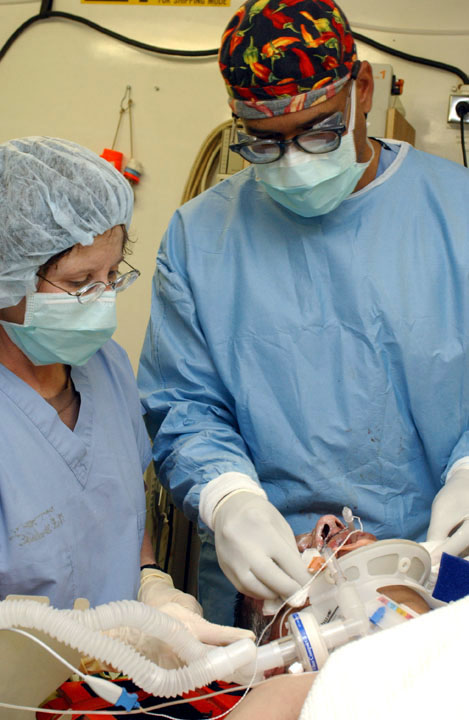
Quick response saves lives

TALLIL AIR BASE, Iraq -- Maj. (Dr.) Donovan Tapper (right) and Maj. Bonnie Mack dress the wounds of a burn vicitim Jan 9. Three patients were transported to the medical facility here for emergency treatment after they were involved in an off-base vehicle accident. Dr. Tapper and Major Mack are assigned to the base's 332nd Expeditionary Medical Group.